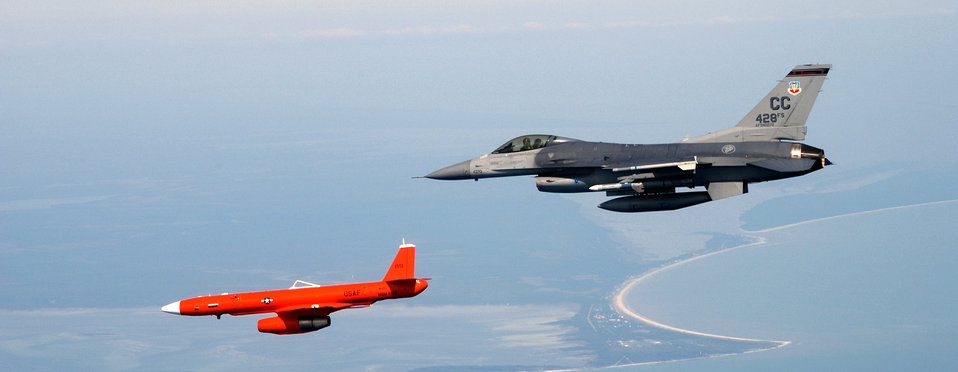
Combat Archer

OVER TYNDALL AIR FORCE BASE, Fla. -- Major Pete Davey flies in formation with an MQM-107E Streaker sub-scale aerial target drone here April 20 during a Combat Archer exercise. MQM-107E sub-scale aerial target drones are assigned to the 82nd Aerial Targets Squadron here and are used as targets during Combat Archer missions. Major Davey is an F-16C Fighting Falcon pilot with the 428th Fighter Squadron at Cannon Air Force Base, N.M.